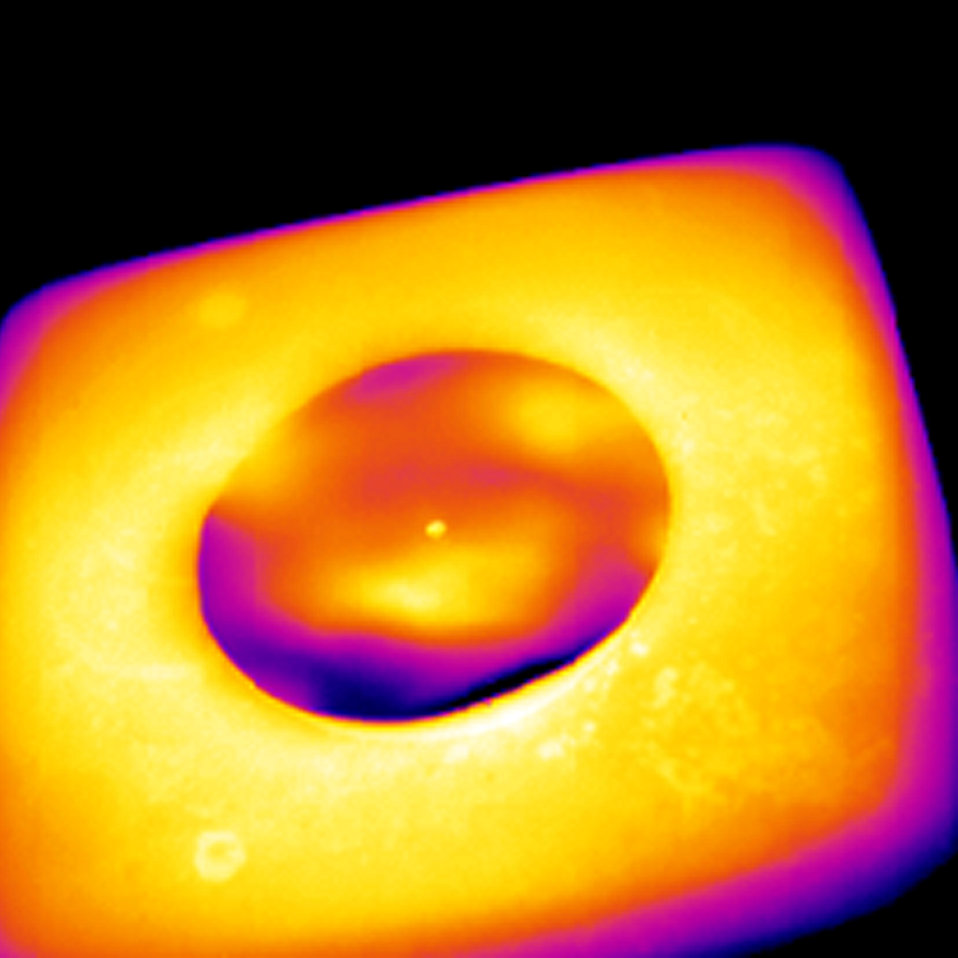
Explosive Hot Pad

An infrared image shows temperature variations as a round swipe cloth is heated to vaporize any explosive particles that may be present. Black/deep purple areas are about 40 degrees C, while yellow/white areas are about 200 degrees C. NIST chemists are developing standards and calibration services to help optimize equipment used at airports and other venues for detecting explosive materials.